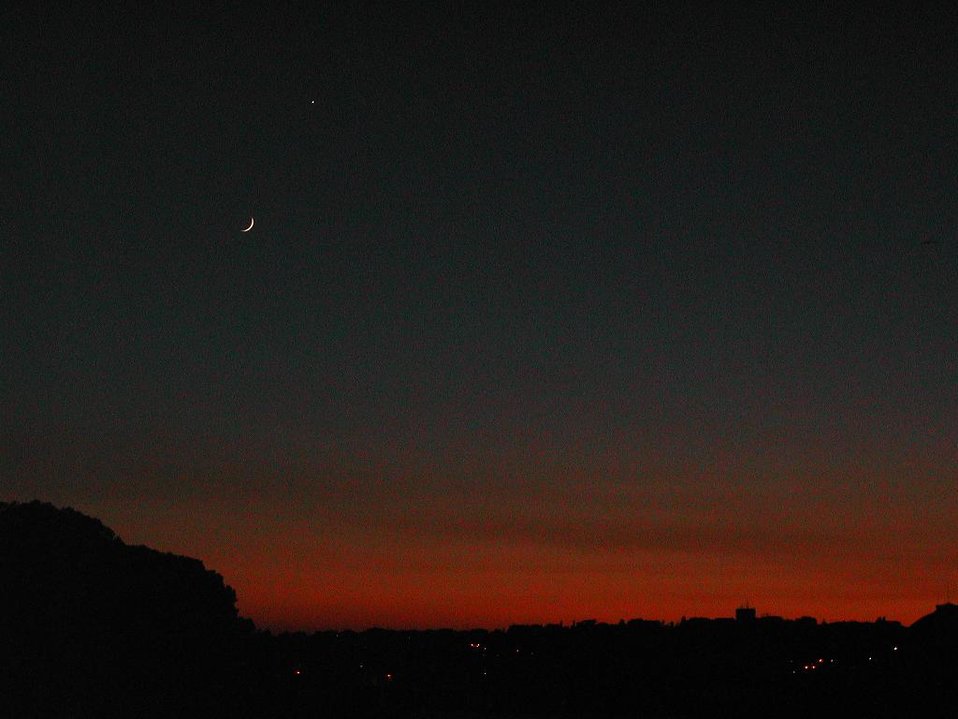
031225-LunaNuovaDallAraceli2